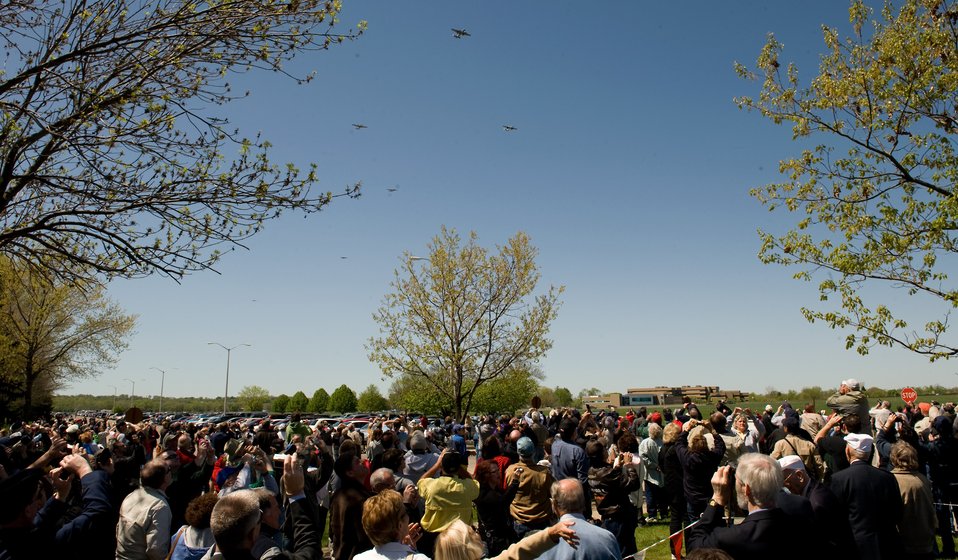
68th Reunion of Doolittle Raiders Flyover

Doolittle Raiders (on right, wearing white caps) look up and wave to the 17 B-25 Mitchell bomber that were seen over the National Museum of the U.S. Air Force at Wright-Patterson Air Force Base, Ohio, on April 18, 2010. This is one of the largest gatherings of the Mitchell Bombers since the historic raid over Tokyo, Japan during World War II.